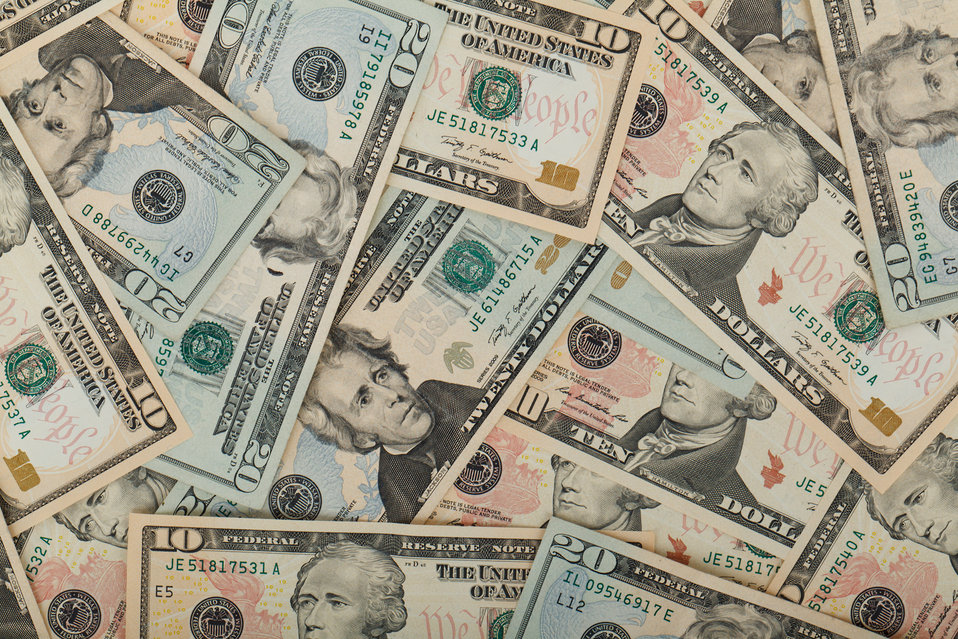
Dollars background

Money background from american dollars.